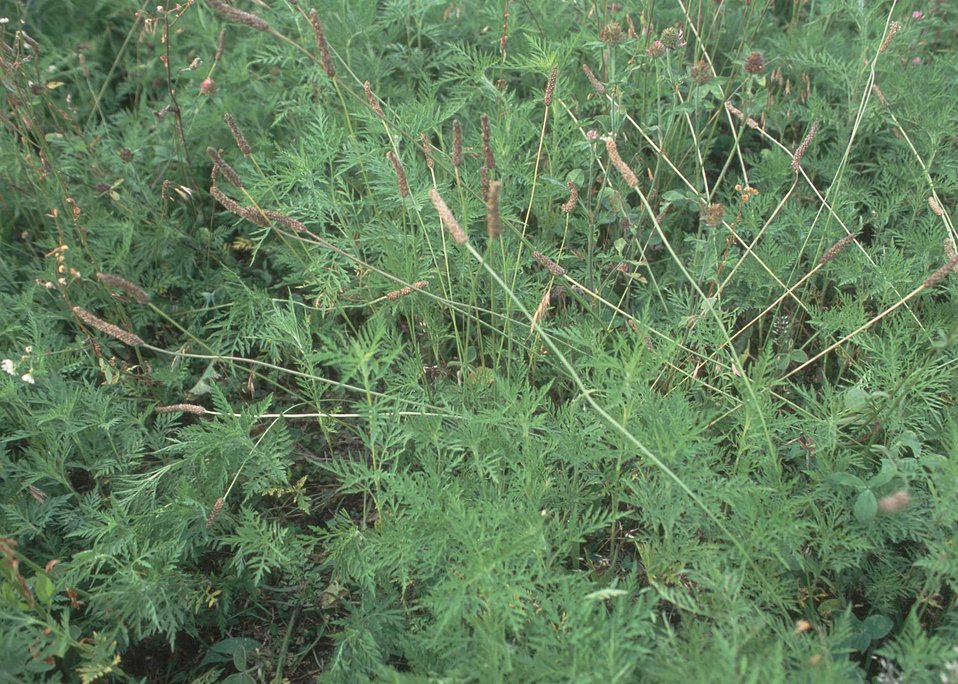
The bare ground underneath common ragweed, as well as the insects and seeds it will produce, make it an excellent plant for quail.